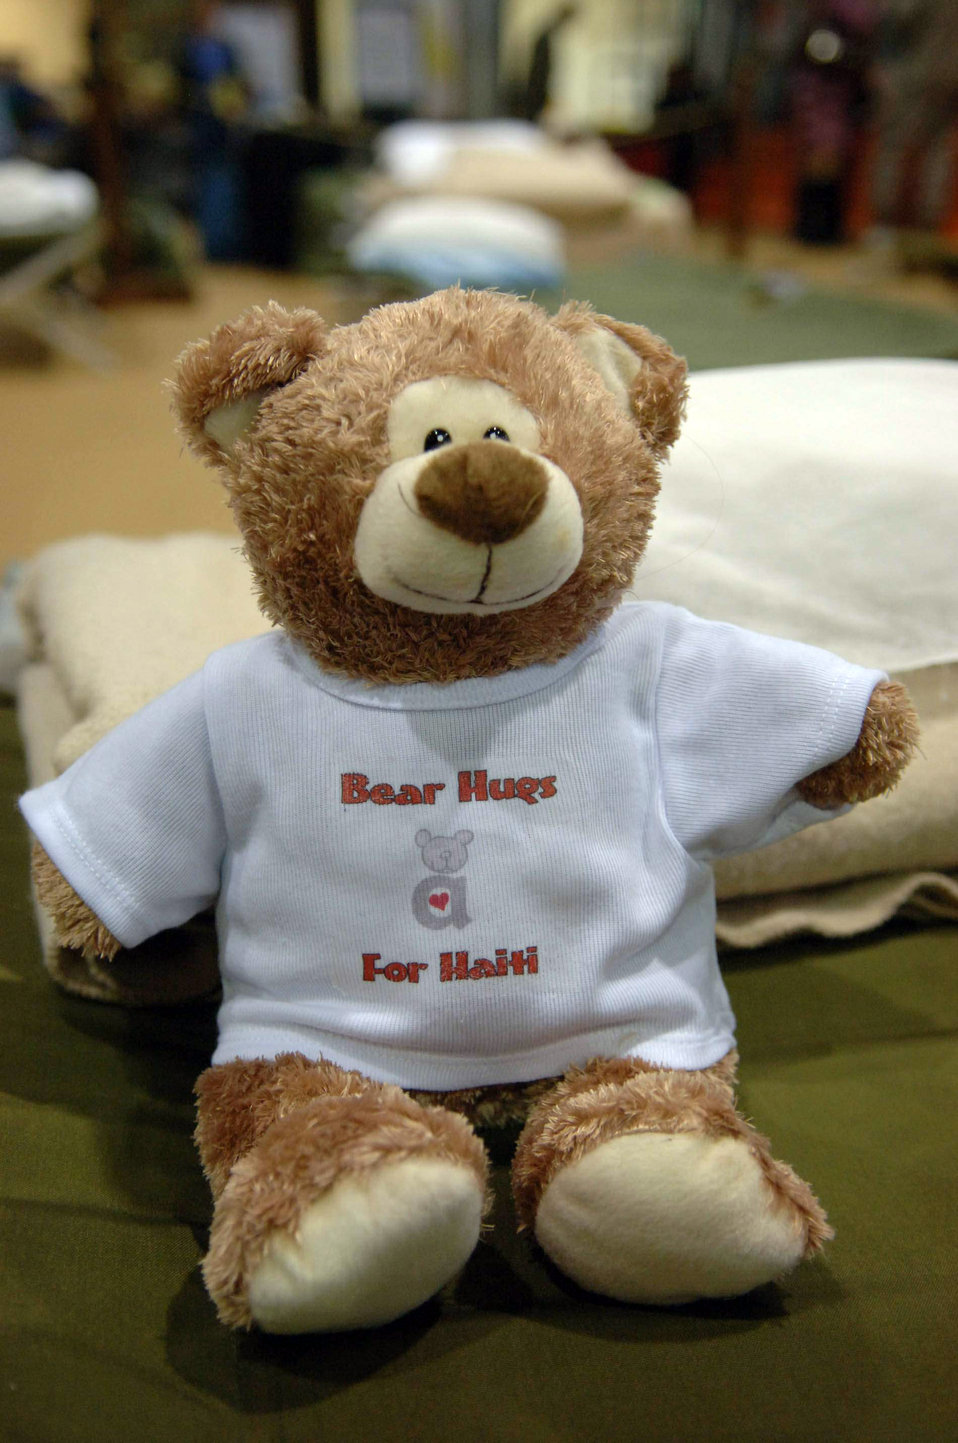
Community, Air Force team up to give Haitians bear hugs

Michele Gillen delivered donated a supply of 500 teddy bears for children of Haiti evacuees on Jan. 24, 2010, at Homestead Air Reserve Base, Fla. The non-profit organization Mrs. Gillen volunteers with donated 2,500 teddy bears to children of displaced evacuees on behalf of Bear Hugs for Haiti. Mrs. Gillen is an an WFOR-TV Miami chief investigative reporter.